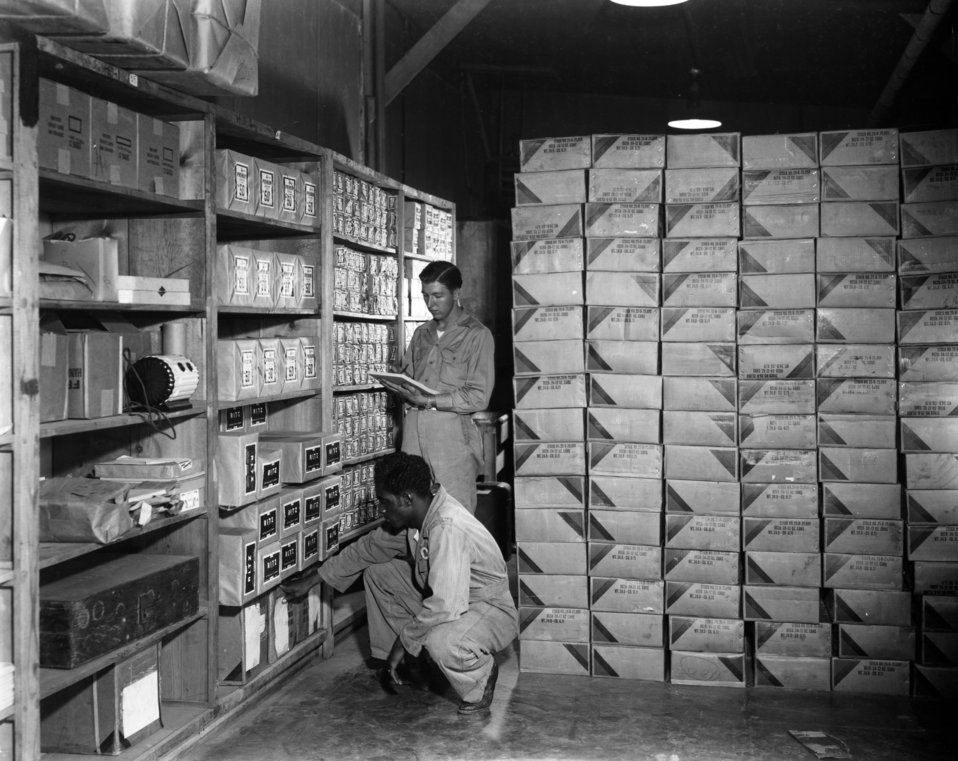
Army Activity at Oak Ridge